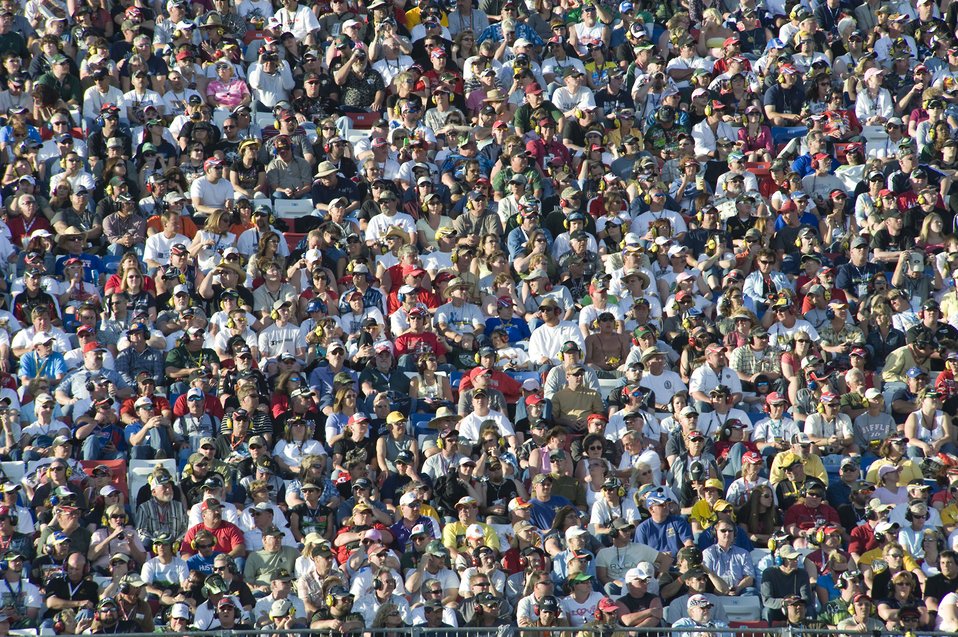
Air Force teams with NASCAR to aid recruiting

The Air Force was on display March 1 in front of about 200,000 race fans packed into the Las Vegas Motor Speedway in Nevada to watch the Shelby 427 Sprint Cup Series race. The Air Force sponsors the No. 43 Dodge driven by Reed Sorenson. Before the race began, a small group of recruits took the oath of enlistment officiated by Lt. Gen. Ronald F. Sams, the Air Force inspector general, and the Air Force Thunderbirds performed a flyover.